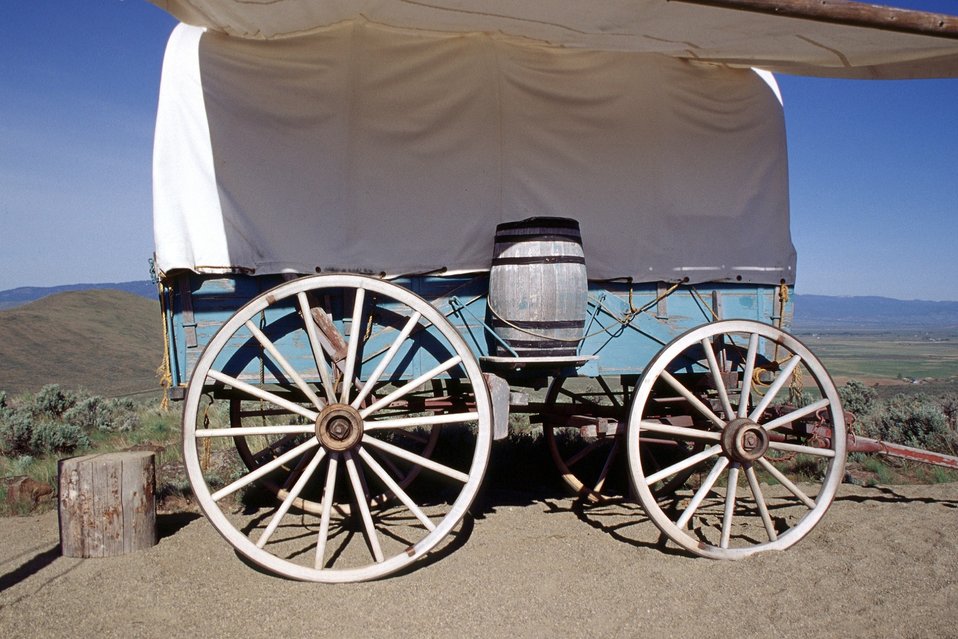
Covered wagon from wagon train reenactment. NHOTIC 10th Anniversary